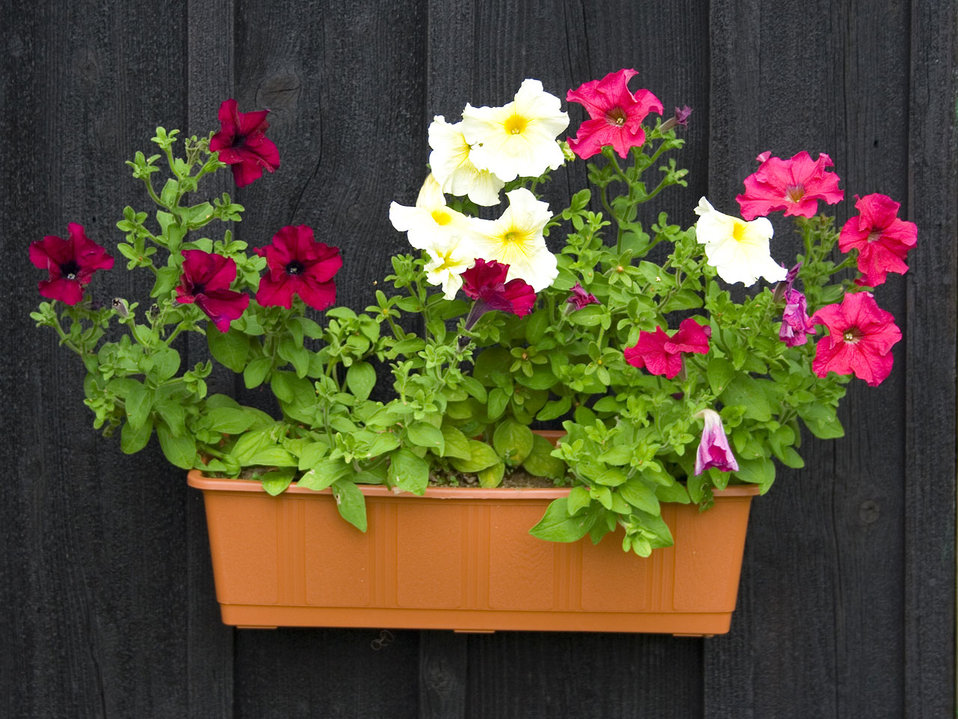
Petunias in pot

Petunias hanging in the pot on the wooden wall.